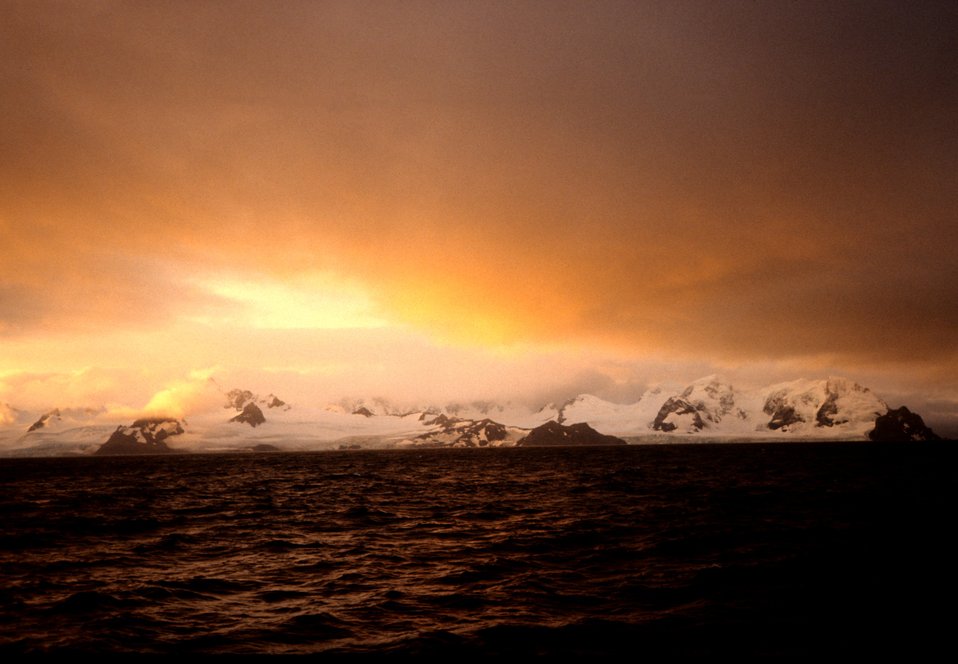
A sunrise in the South Shetland Islands.